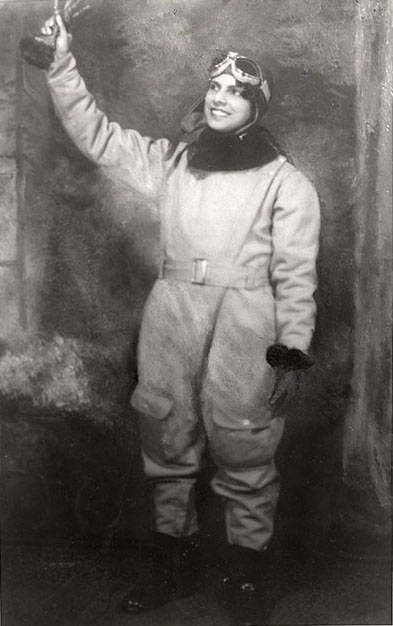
Willa Brown: Helped African-Americans become part of military

Willa Brown became the first African-American officer in the Civil Air Patrol.